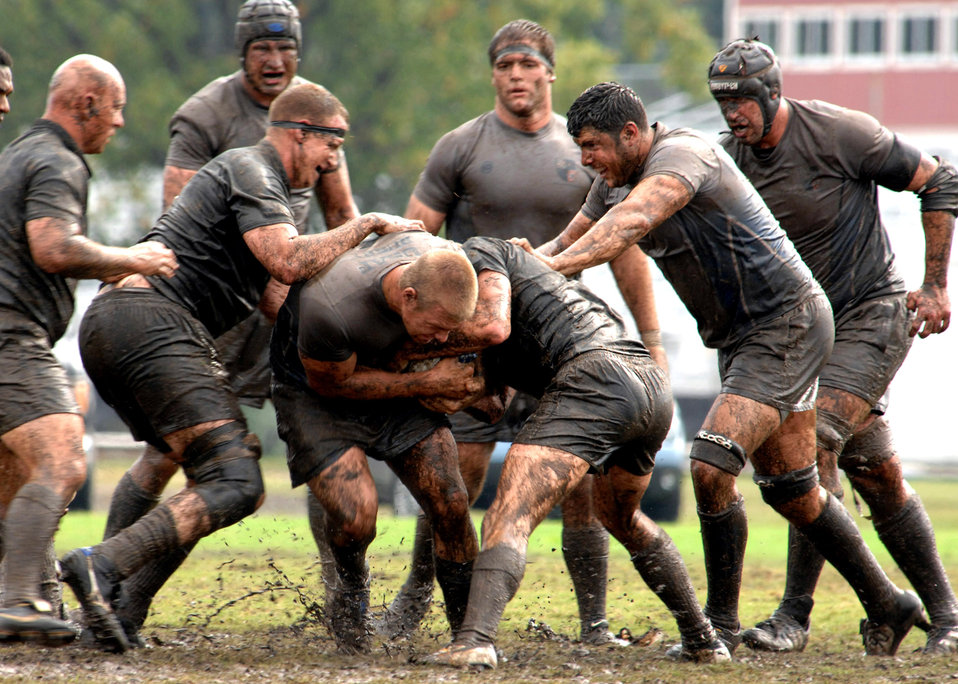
Hey! Where's the ball?

Air Force rugby player Ryan Dombrock is tackled while his teammates prepare to ruck the Army defenders during the 2007 Armed Forces Rugby Tournament Oct. 27 at Marine Corps Base Camp Lejeune, N.C. The Airmen won 22-5 for a fourth consecutive championship victory.